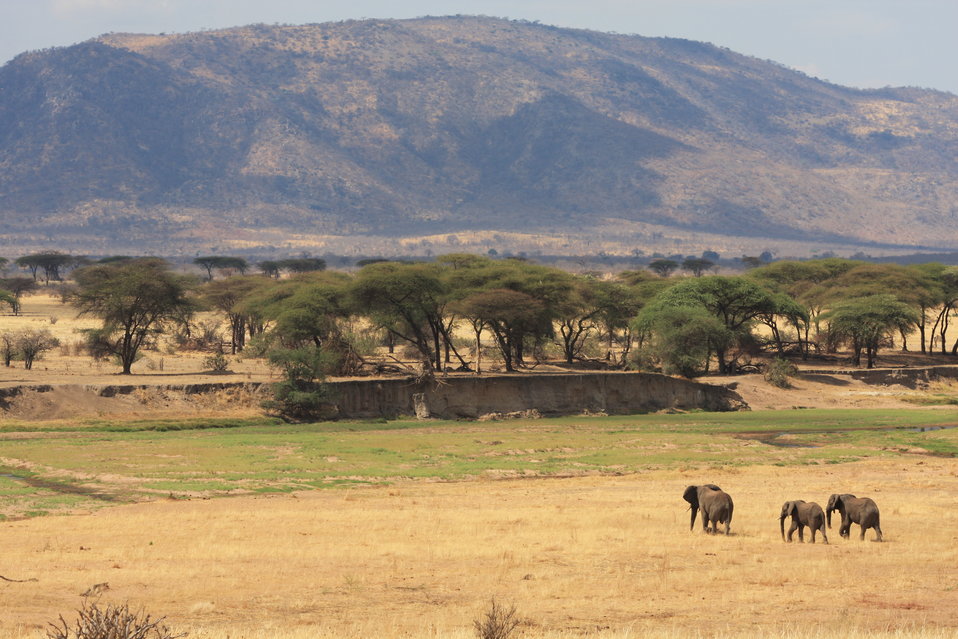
Threats to elephant survival

Elephant survival is threatened by a lack of water in some parts of Africa. Ruaha River, Tanzania.